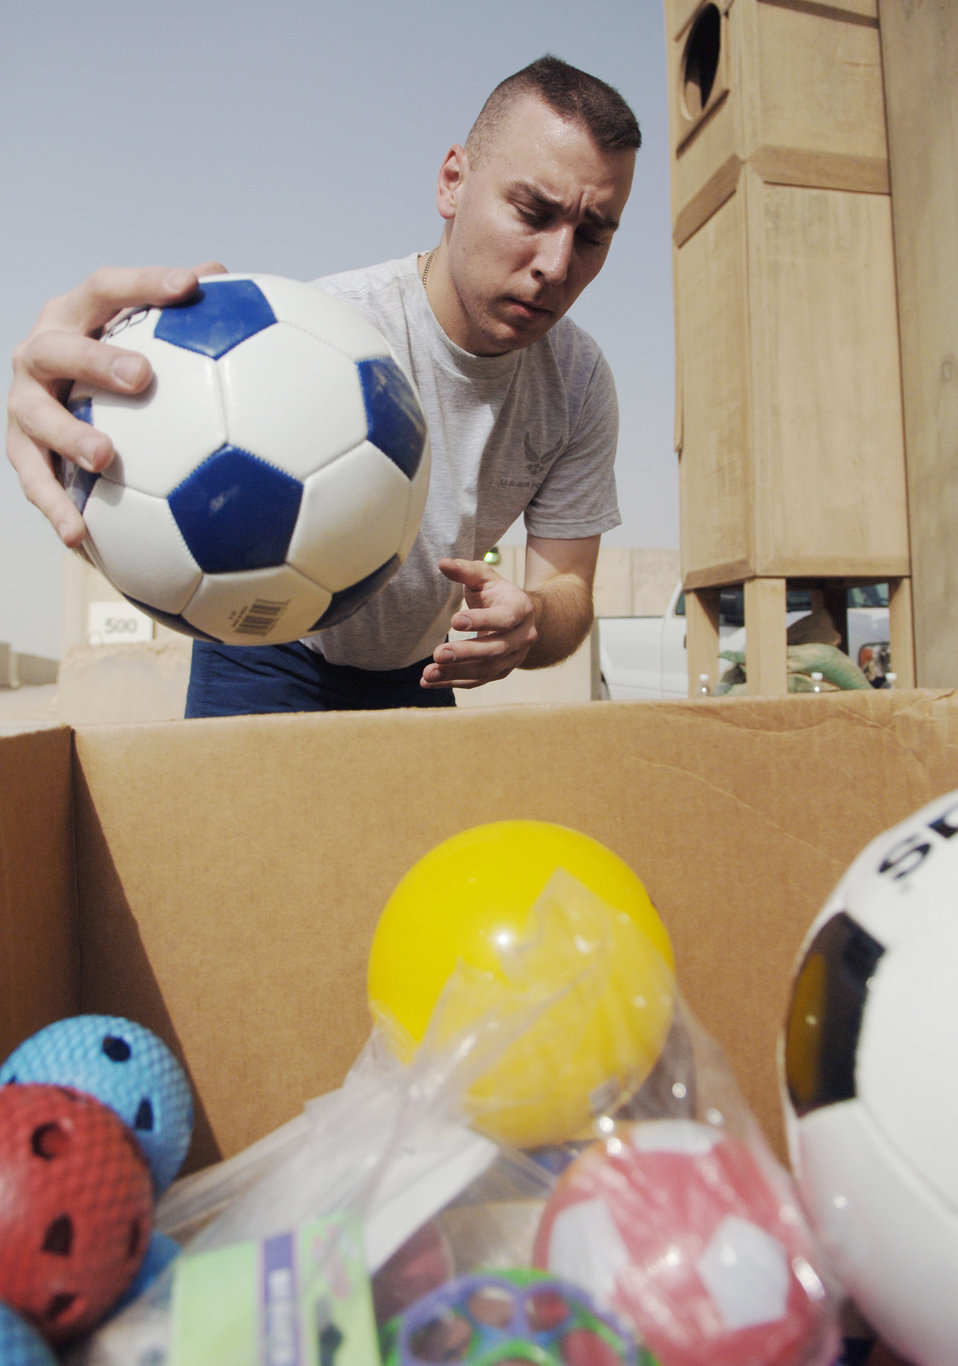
Iraqi children get a kick out of donations

Capt. Jason Glanovsky loads soccer balls into boxes to be distributed to Iraqi children living near Balad July 15 at Joint Base Balad, Iraq. The Pennsylvania State University chapter of the Phi Kappa Tau fraternity sponsored a donation drive at a soccer tournament in June, and then shipped the balls here for distribution. Captain Glanovsky is assigned to the 727th Expeditionary Air Control Squadron.